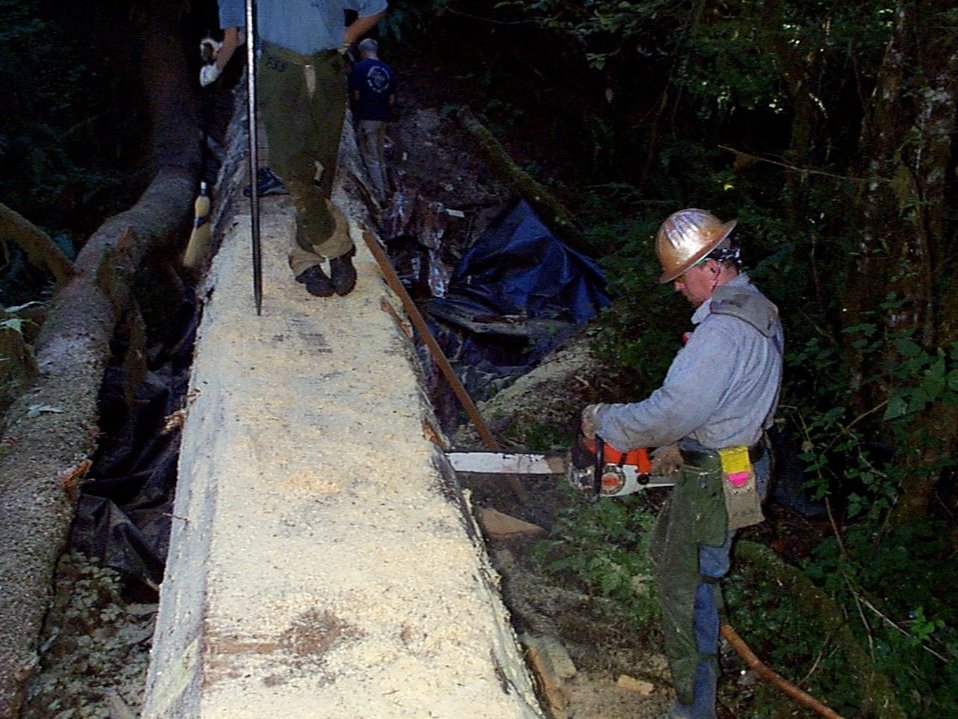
BLMer helps on bridge construction.